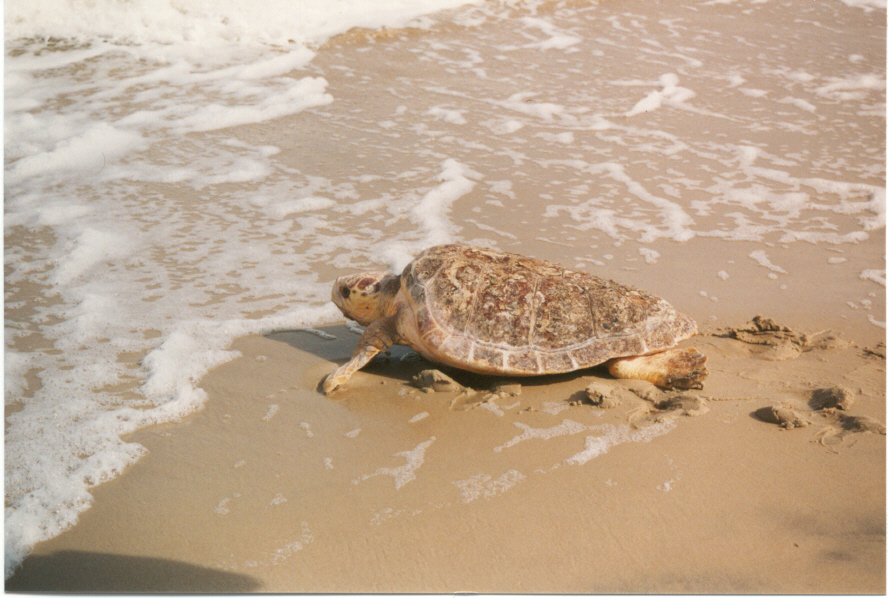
Female loggerhead sea turtle at Back Bay National Wildlife Refuge in Virginia.